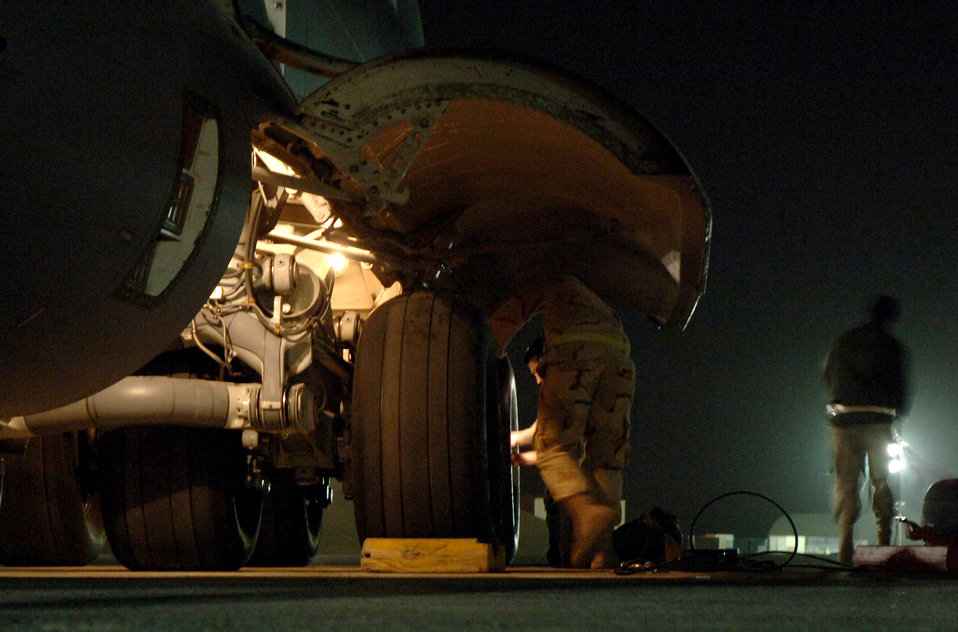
Tire change

Crewmembers from the 817th Expeditionary Airlift Squadron change a tire on a C-17 Globemaster III at a deployed location in Southwest Asia on Sunday, Mar. 12, 2006. The aircraft is from McChord Air Force Base, Wash.